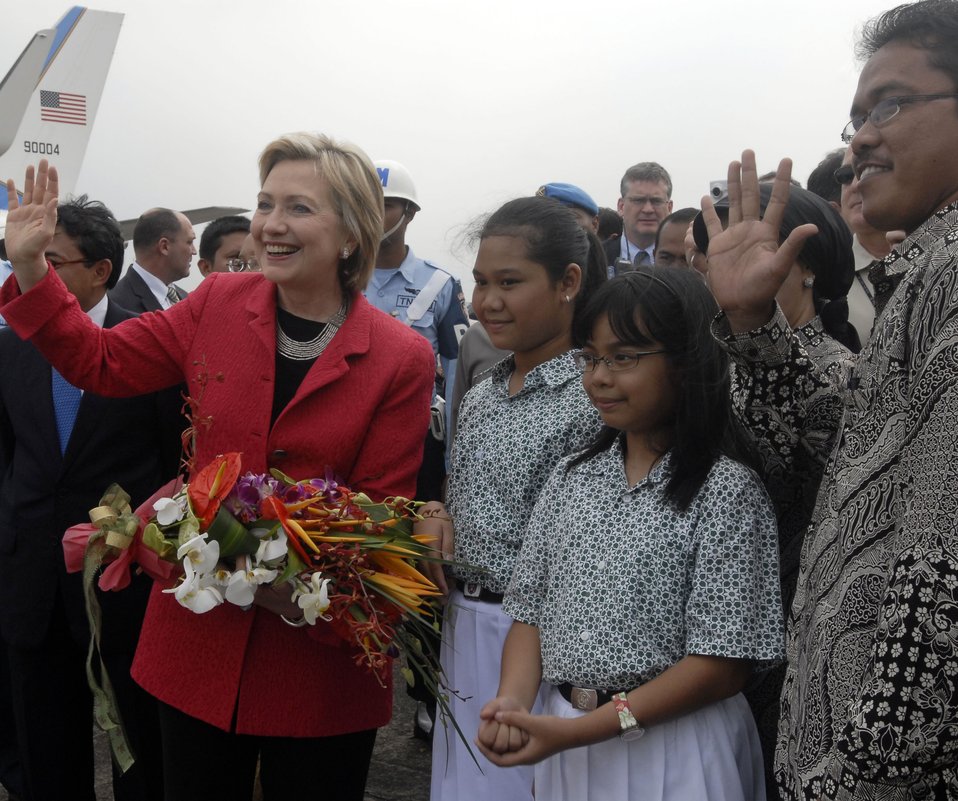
Secretary Clinton in Jarkarta With Children's Choir

Secretary Clinton with members of Menteng Elementary School 1 Children's Choir waving to the crowd in Jarkarta, Indonesia February 18, 2009.